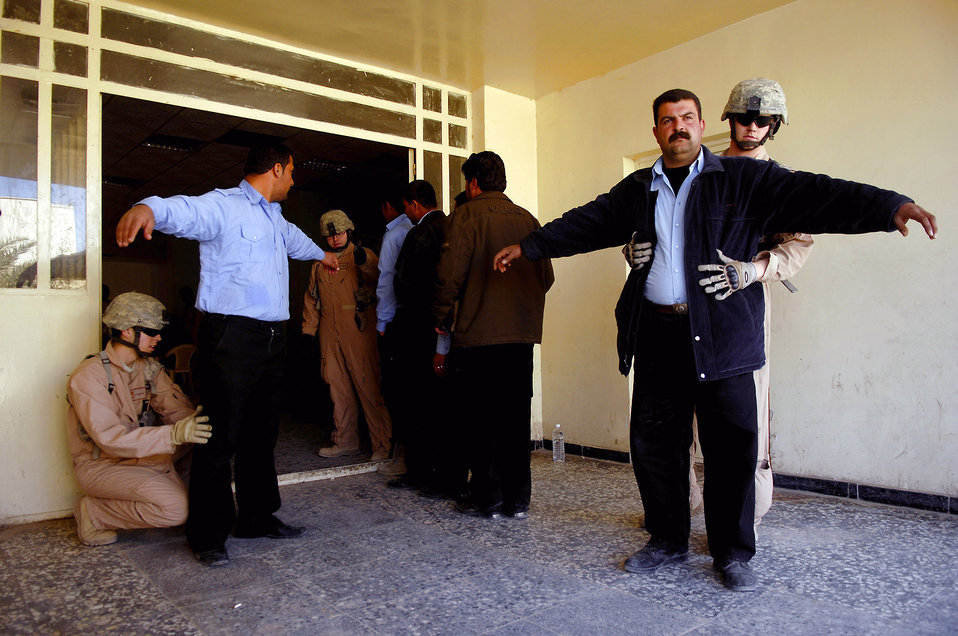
Airmen improve Iraq's security

Security forces Airmen conduct a search of Iraqi police officers prior granting access into the database by the handheld interagency identity detection equipment Feb. 23 at Rasheed, Iraq. Security forces Airmen are assigned to Det. 3, 732nd Expeditionary Security Forces Squadron from Sather Air Base, Iraq.